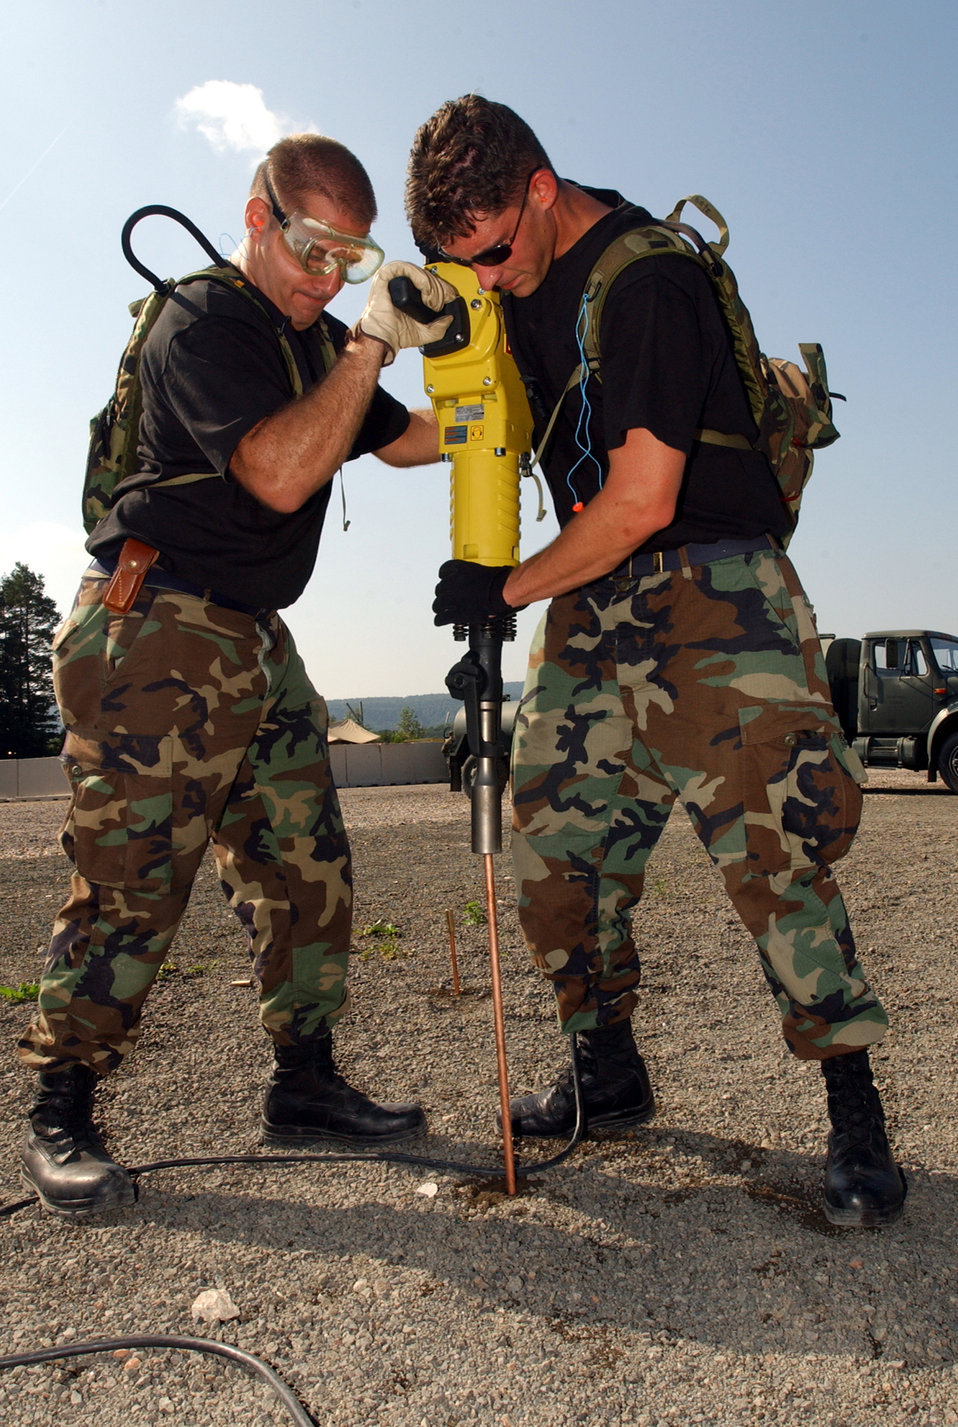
Powering the communication

RAMSTEIN AIR BASE, Germany -- Tech. Sgt. Jason LaPorte (right) and Staff Sgt. Brian Janssen set up a grid grounding star to power the communications equipment for a Silver Flag exercise here July 21. Sergeants LaPorte and Janssen are both assigned to the 269th Combat Communications Squadron.